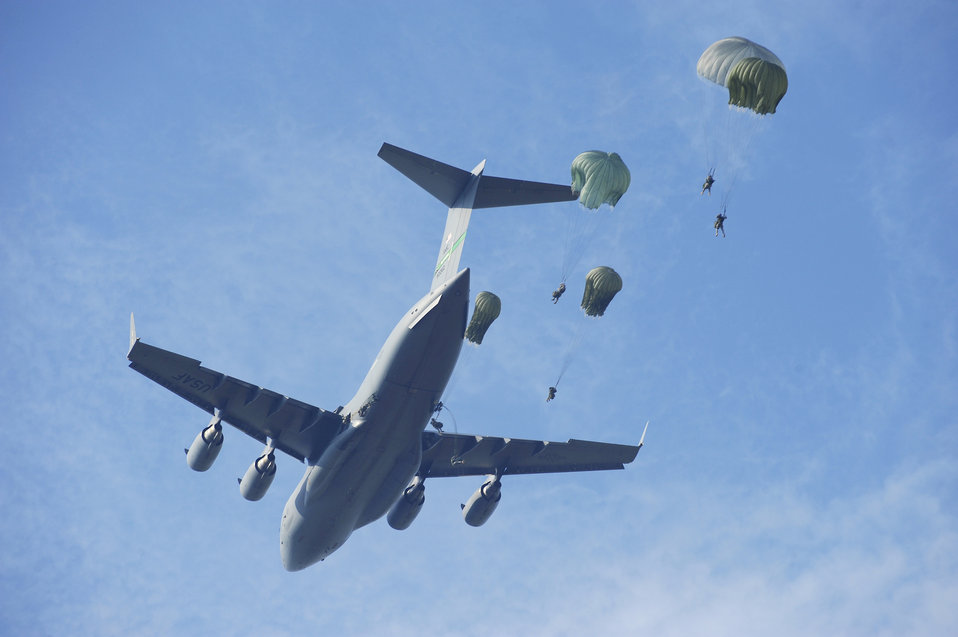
Here I come!

U.S. Army Rangers parachute from a C-17 Globemaster III aircraft over Fort Benning, Ga., Aug. 3 during Ranger Rendezvous 2009. More than 1,000 Rangers assigned to four Ranger battalions from across the country participated in the mass tactical jump.